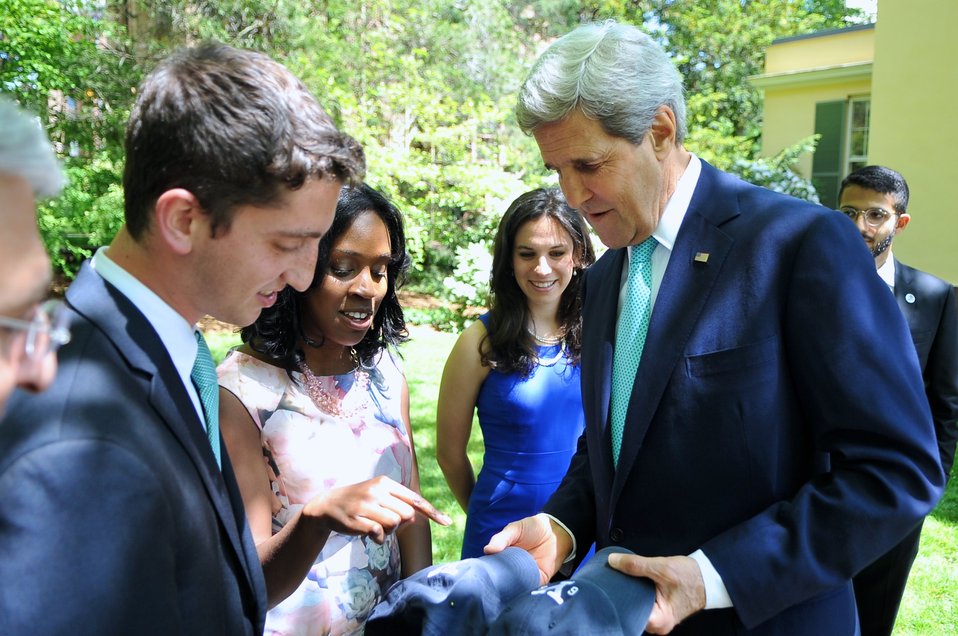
Yale Seniors Present Secretary Kerry With Commemorative Baseball Caps

Yale University seniors who invited U.S. Secretary of State John Kerry to address them on May 18, 2014 at the annual Class Day ceremonies in New Haven, Connecticut, present him with a pair of baseball hats commemorating 1966, the year he graduated, and 2014, to mark their graduation.